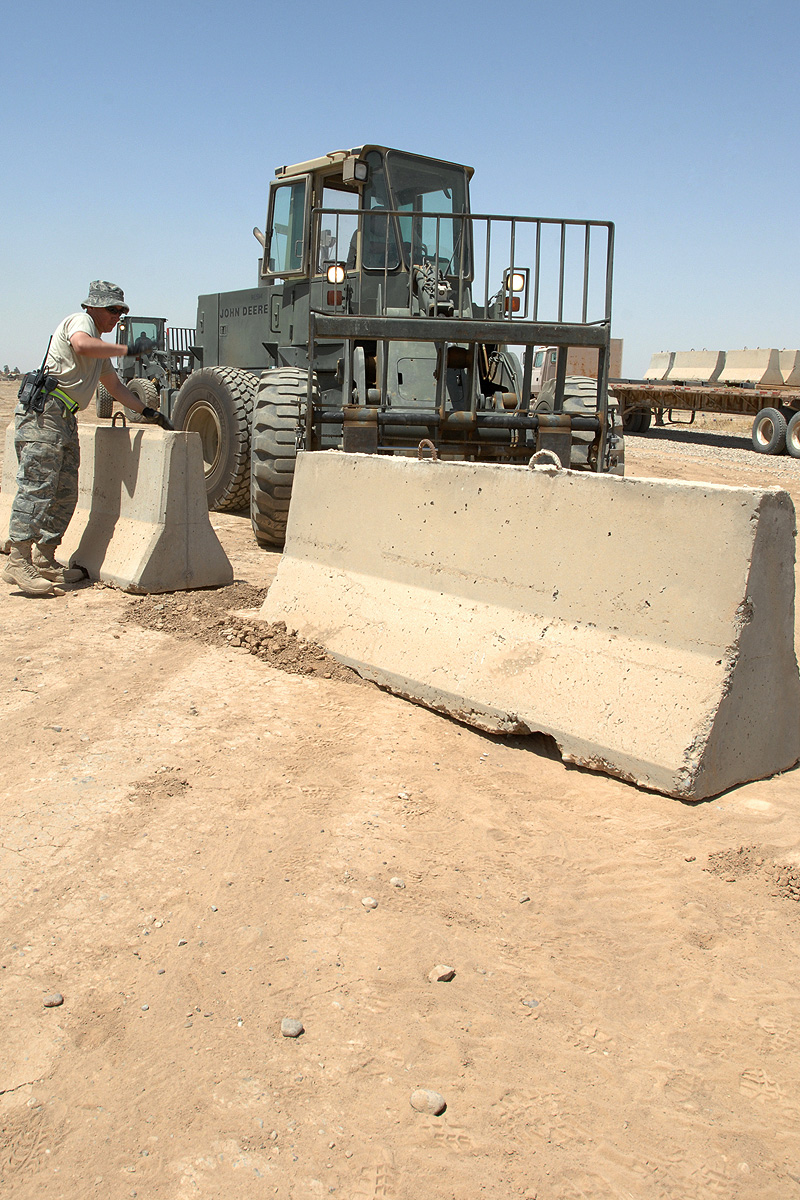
Volunteers create safety barrier

Senior Master Sgt. Ernesto Gonzalez directs the placement of jersey barriers at the Kirkuk Air Base, Iraq, flightline. This was the first step in a self-help airfield security project that saved an estimated $500,000 by using existing assets and volunteers. Sergeant Gonzalez is the 506th Expeditionary Logistics Readiness Squadron chief enlisted manager, and deployed from March Air Reserve Base, Calif.